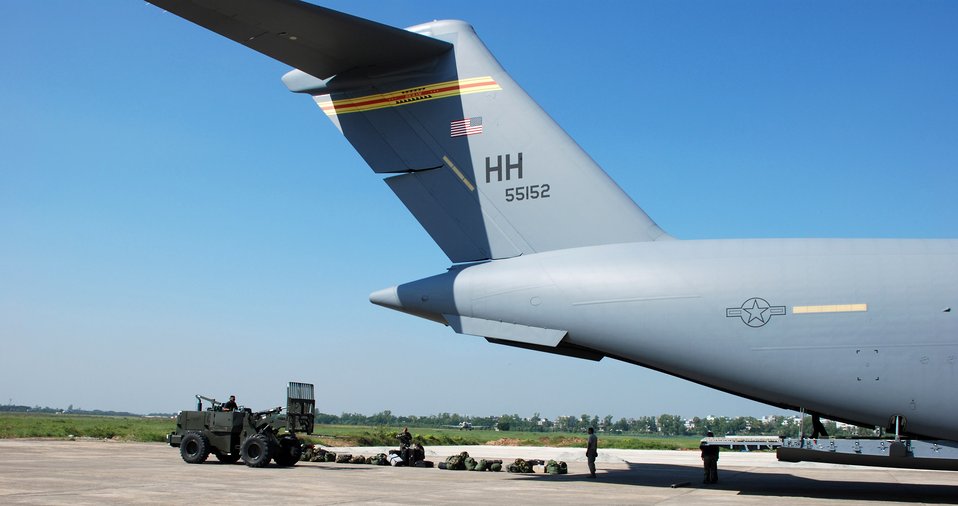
Air Force aid arrives in Bangladesh

Airmen offload cargo from a C-17 Globemaster III Nov. 26 at Zia International Airport in Dhaka, Bangladesh. A 37-person team from the 36th Contingency Response Group from Andersen Air Force Base, Guam, will establish relief supply transload operations in the wake of a Nov. 15 tropical cyclone that devastated much of the southern part of the country. The C-17 and crew are from the 535th Airlift Squadron at Hickam AFB, Hawaii.